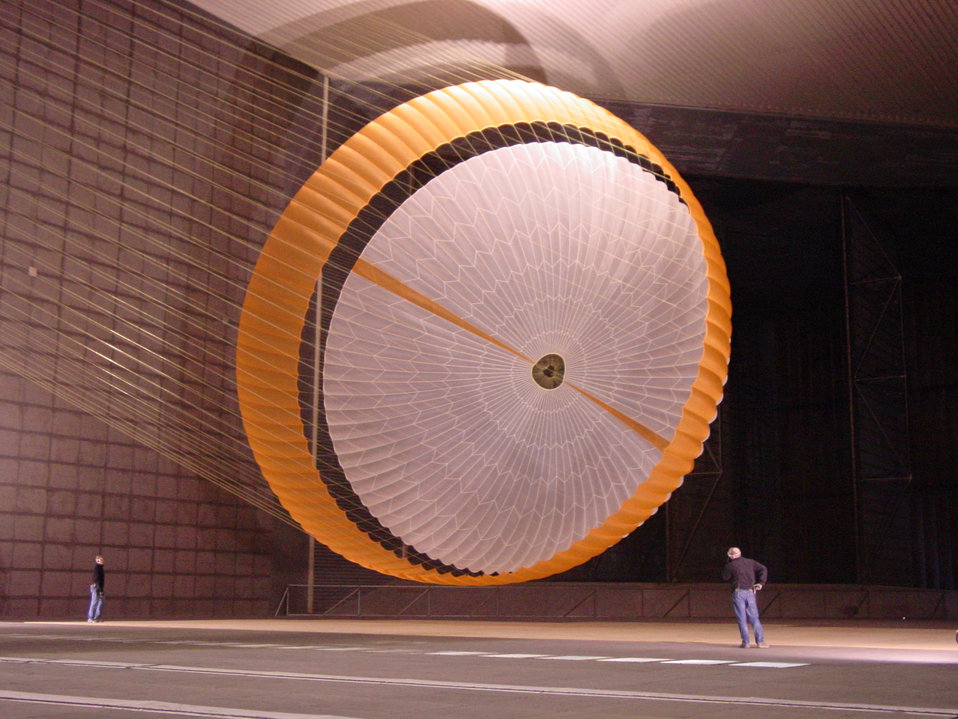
Mars Rover

In this image, two engineers are dwarfed by NASA's Mars Science Laboratory's parachute, which holds more air than a 3,000-square-foot house and is designed to survive loads in excess of 36,000 kilograms (80,000 pounds). The parachute, built by Pioneer Aerospace, South Windsor, Conn., has 80 suspension lines, measures more than 65 feet in length, and opens to a diameter of nearly 55 feet. It is the largest disk-gap-band parachute ever built and is shown here inflated in the test section with only about 12.5 feet of clearance to both the floor and ceiling of the world’s largest wind tunnel at National Full-Scale Aerodynamics Complex. The parachute is attached to a launch arm mounted on a swivel-base that allows the test item to pitch and yaw under simulated conditions of subsonic entry into the Martian atmosphere.